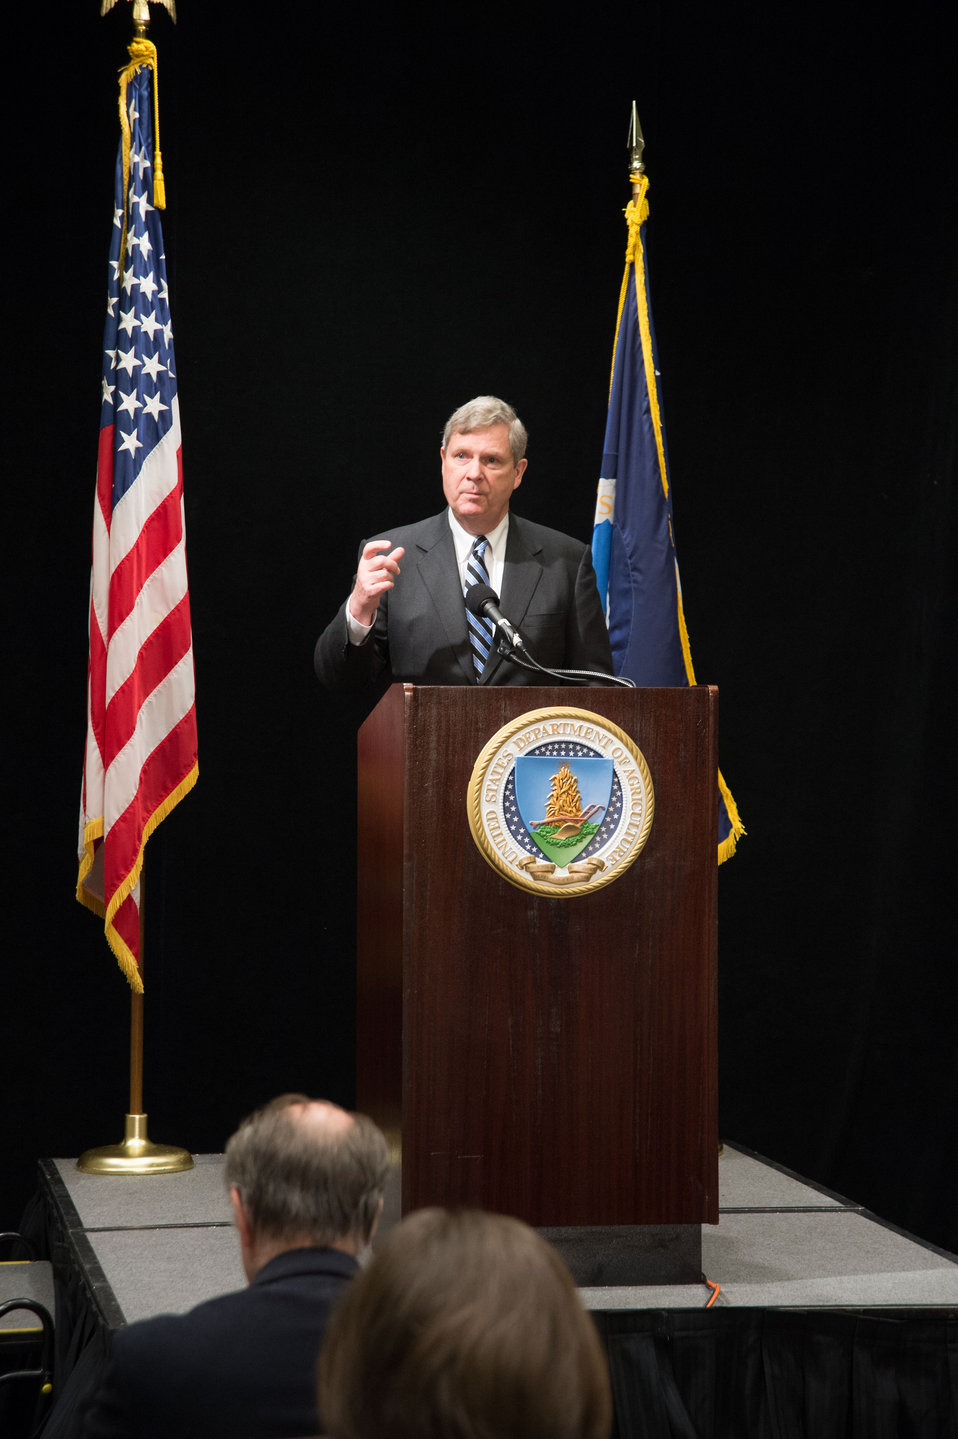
Agriculture Secretary Tom Vilsack makes remarks to the press at the 2014 Agricultural Outlook Forum on Thursday, Feb. 20, 2014 in Arlington, VA. The U.S. Department of Agriculture's (USDA) annual Agricultural Outlook Forum brings together the agricultural community to discuss policy, trade, science, rural development, and the economic outlook for the coming year. The Forum also focuses on forestry, health and nutrition issues, and the changing dynamics and face of rural America.